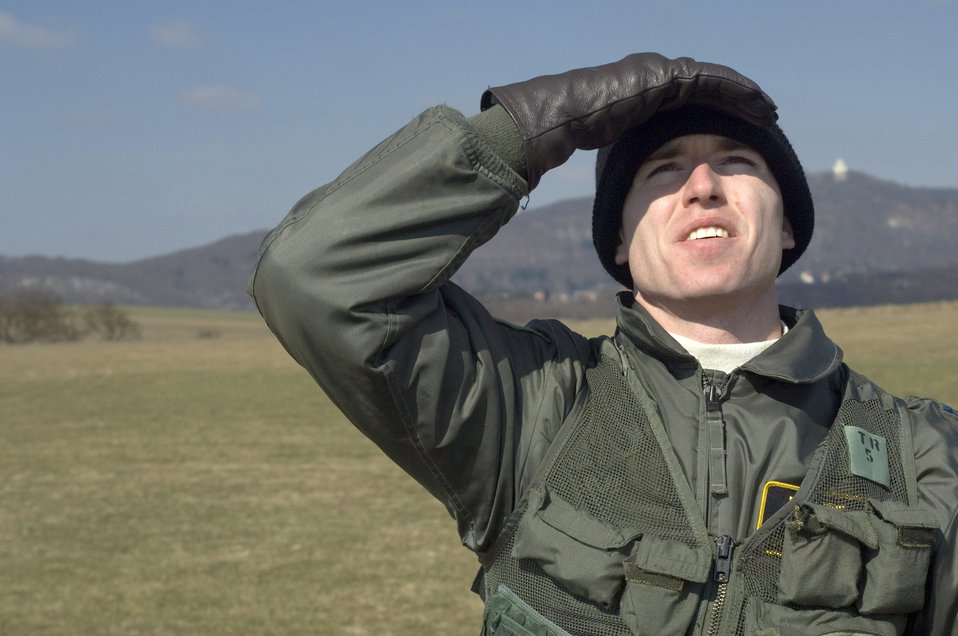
Pilot extraction

Capt. Doug Galloway scans the sky for an A-10 Thunderbolt II during combat search and rescue training at Marpingen, Germany, Monday, March 13, 2006. Captain Galloway is an A-10 fighter pilot from Fort Walton Beach, Fla., with the 81st Fighter Squadron at Spangdahlem Air Base, Germany.